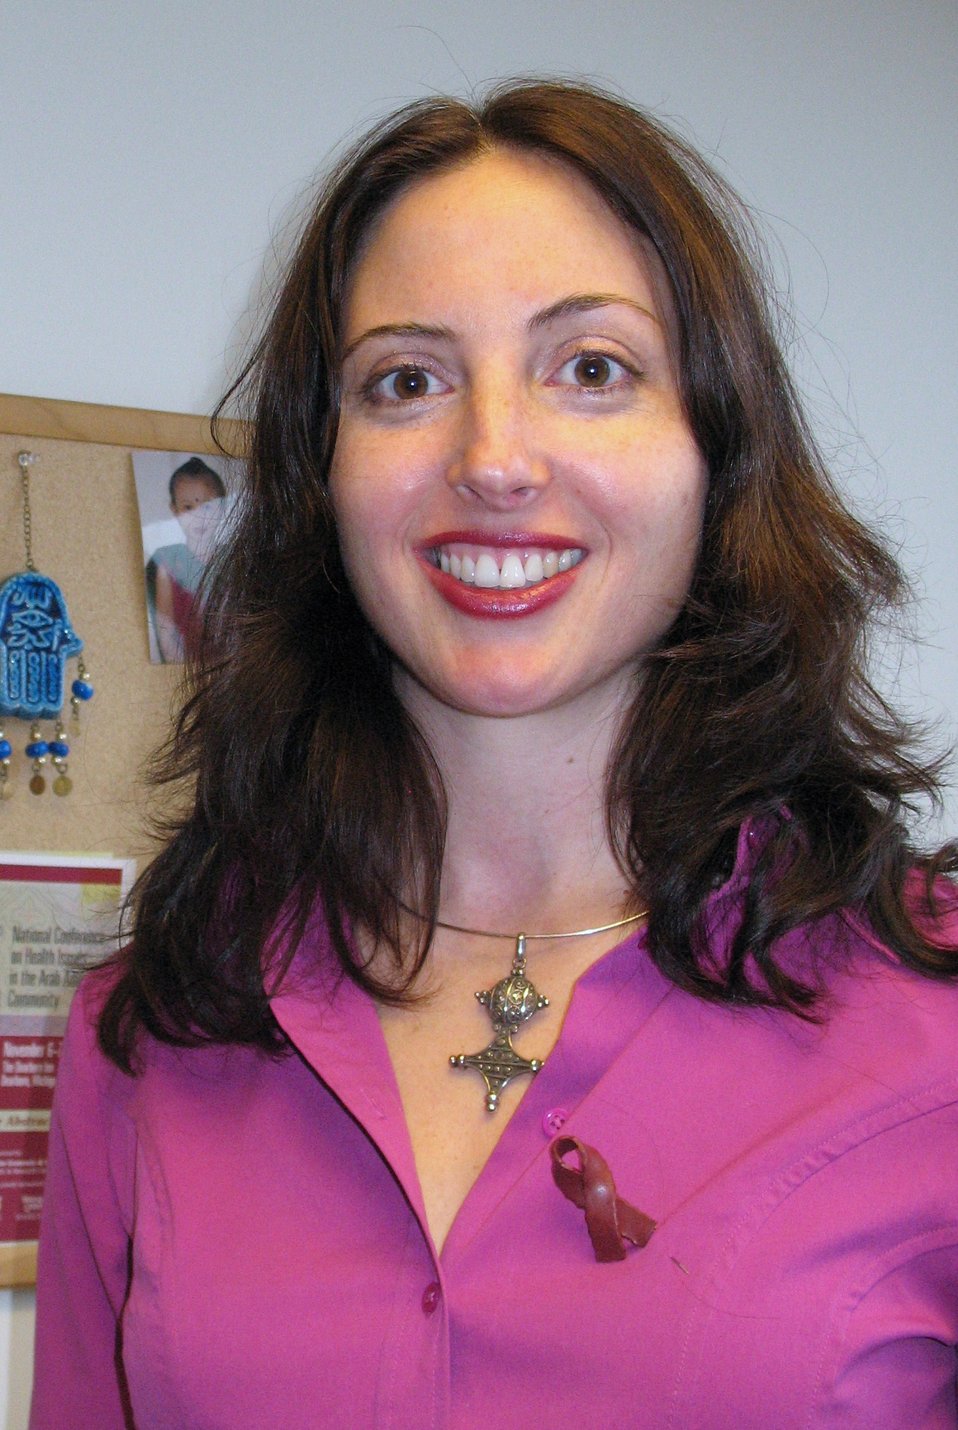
MC